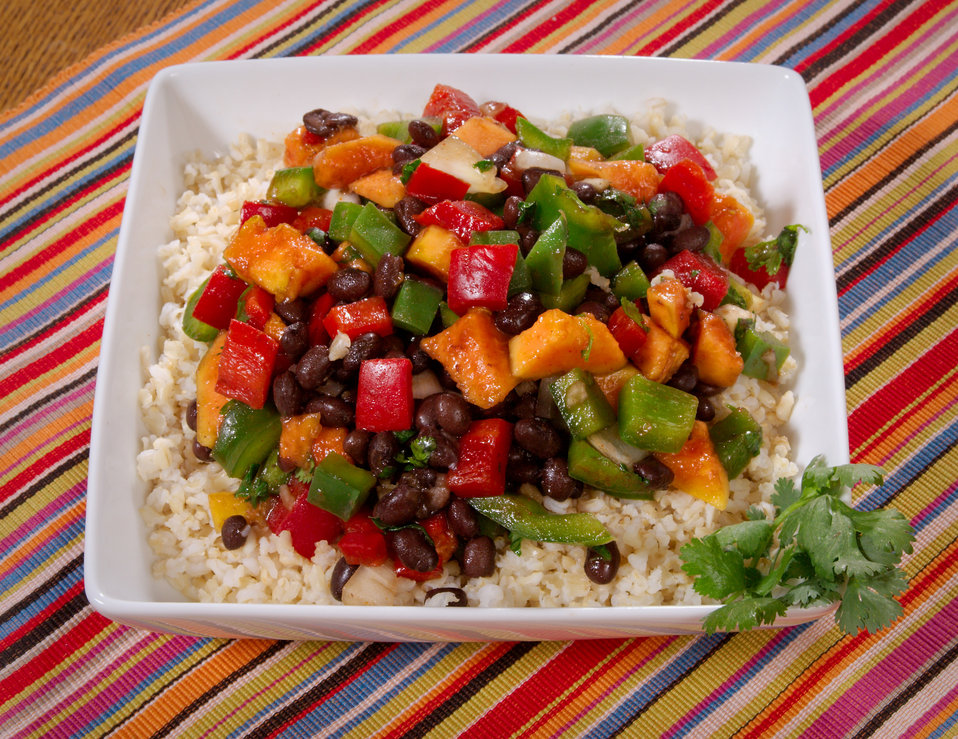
This appealing dish called, Papaya Black Beans and Rice, provides a wide range of nutrients including 13 grams of protein, 14 grams of dietary fiber, and vitamins A and C. The recipe, which may be accessed by way of the link below, calls for papaya, red and green bell peppers, onion, black beans, brown rice, garlic, olive oil, orange and lemon juices, and cayenne pepper.